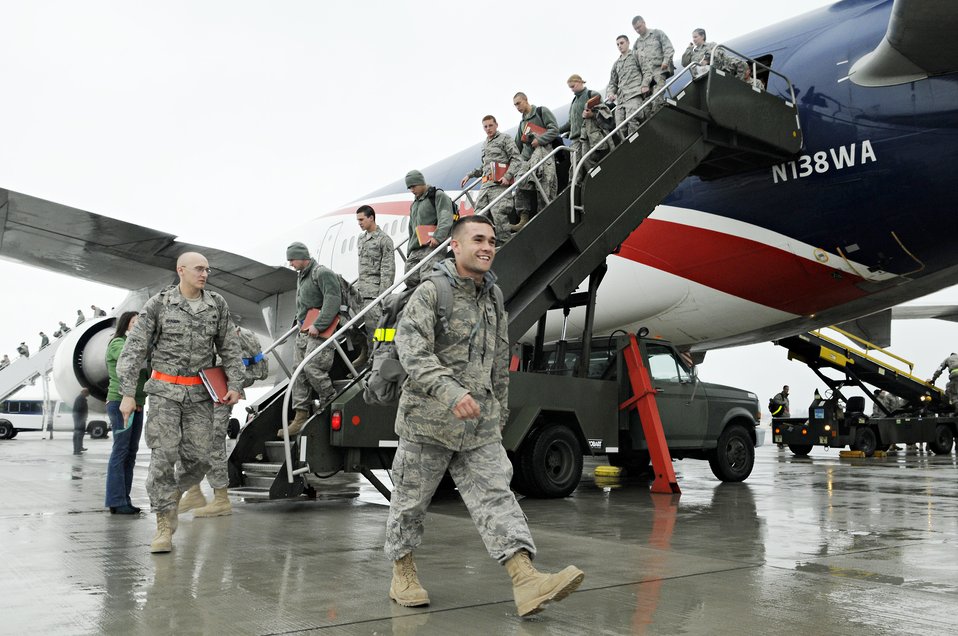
Spangdahlem team returns home

Airmen returning from a deployment make their way to their families at Spangdahlem Air Base, Germany, Feb. 5, 2010. More than 300 members returned to Spangdahlem after a deployment to Joint Base Balad, Iraq, in support of Operation Iraqi Freedom.